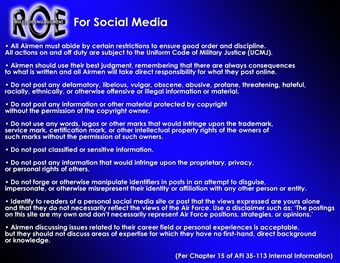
AFNET to be opent to Social media sites

In April, Air Force personnel will be allowed to access Internet-based social media sites via the Air Force Network for official use and limited personal use. All Airmen must use due diligence when posting information online and must always follow Joint Ethics regulations, operations security and pubished rules of engagement.